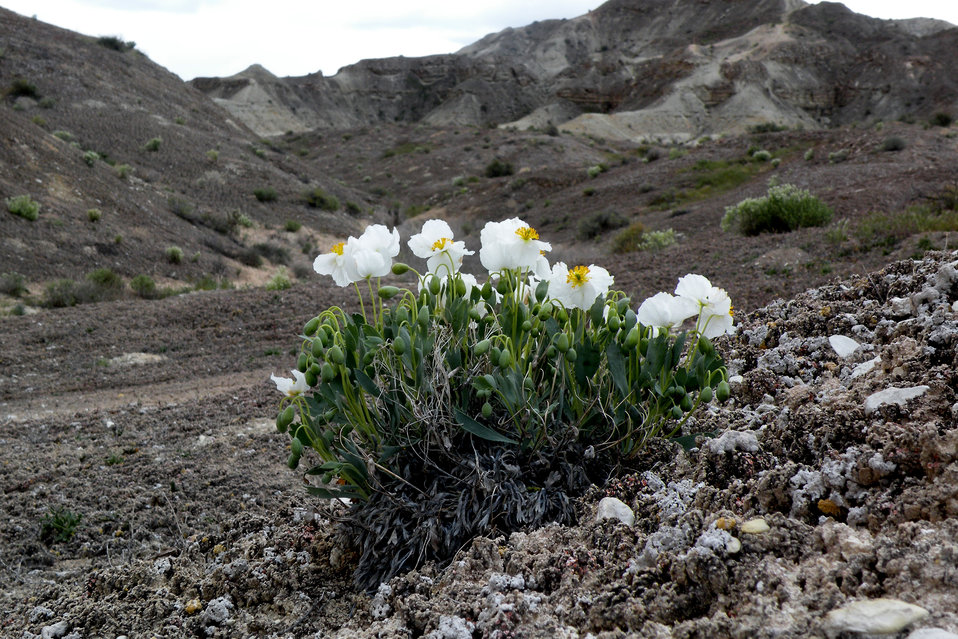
Dwarf bearclaw poppy (Arctomecon humilis)

The dwarf bearclaw poppy is endemic to Washington County, UT. It is restricted to clay soils of the Moenkopi Formation. It occurs on rolling hills and bluffs in sparsely-vegetated desert shrub communities between 2,700 ft. and 3,330 ft. in elevation. It is listed endangered